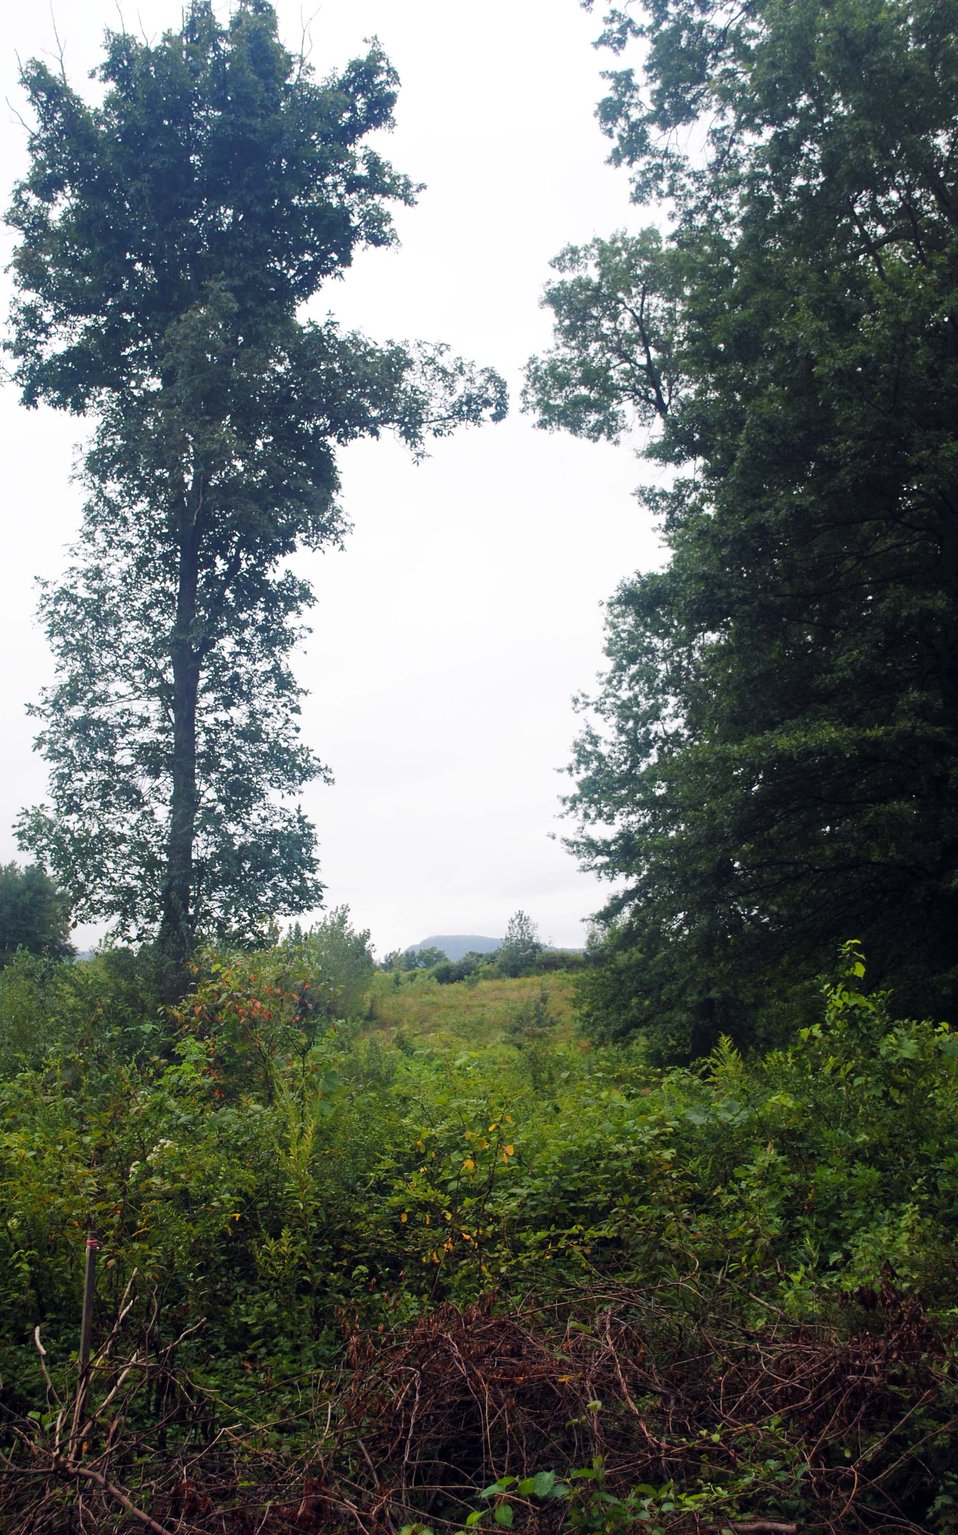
Fort River Division

Mountain in the background at the Fort River Division of the Silvio O. Conte National Wildlife Refuge, Hadley, MA.